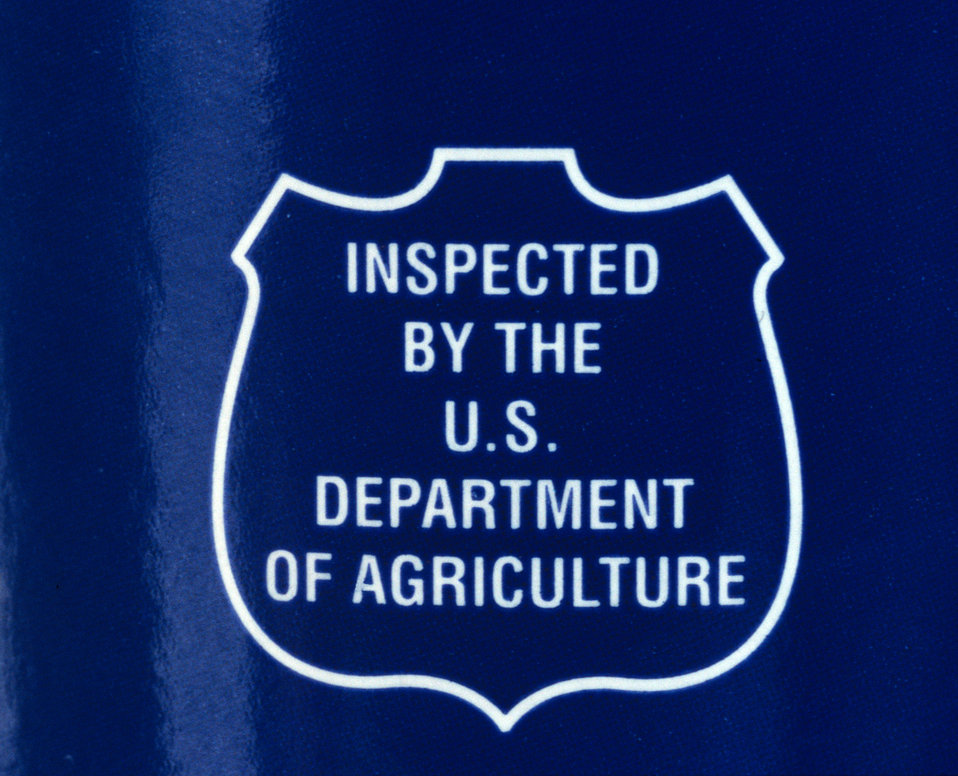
The U.S. Department of Agriculture (USDA) Agricultural Marketing Service (AMS) Processed Products Division offers a variety of resources that may be used to establish the quality of processed fruit, vegetables, and other related products. These resources broadly consist of the documents listed below. Voluntary U.S. grade standards are issued under the authority of the Agricultural Marketing Act of 1946, which provides for the development of official U.S. grades to designate different levels of quality. These grade standards are available for use by producers, suppliers, buyers, and consumers. As in the case of other standards for grades of processed fruits and vegetables, these standards are designed to facilitate orderly marketing by providing a convenient basis for buying and selling, for establishing quality control programs, and for determining loan values.